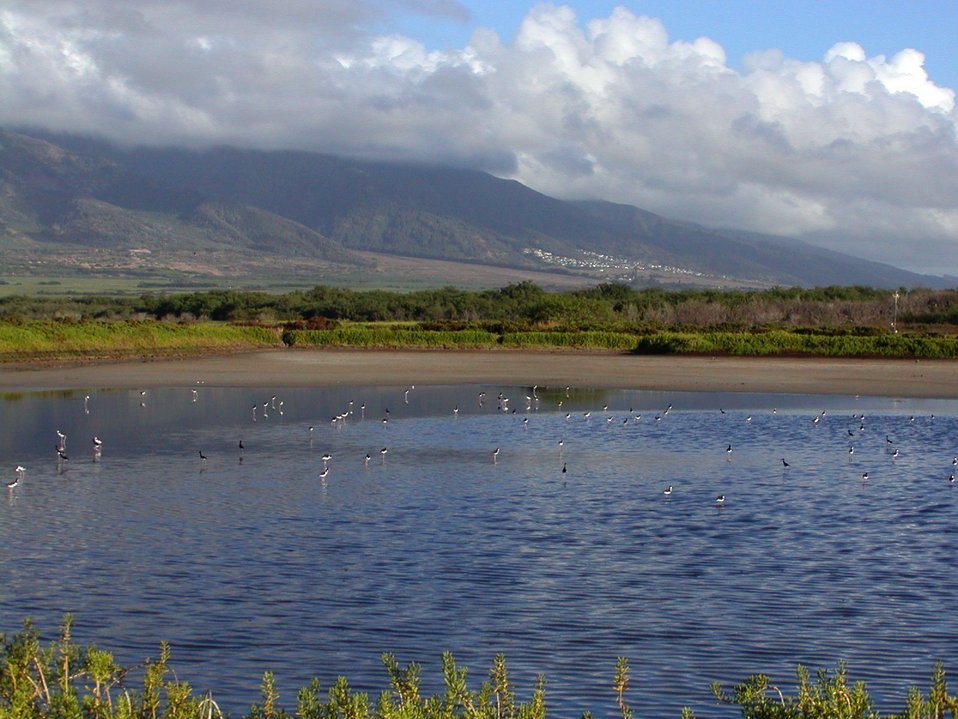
Kanuimanu Ponds Trail

Kealia Pond Refuge, Hawaii.